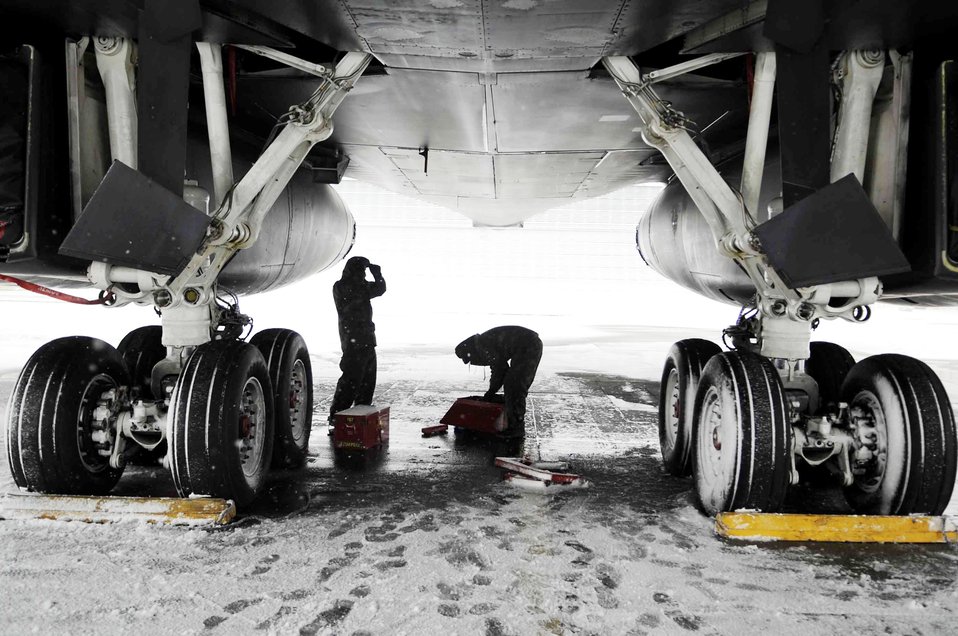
Cold and snow no obstacle for Ellsworth maintainers

Airmen of the 28th Maintenance Group keep the B-1B Lancer functional Oct. 29, 2009, at Ellsworth Air Force Base, S.D. Despite the extreme cold and large snowfall in the South Dakota climate, the maintainers are on constant standby to assure all aircraft are ready for take-off at all times.